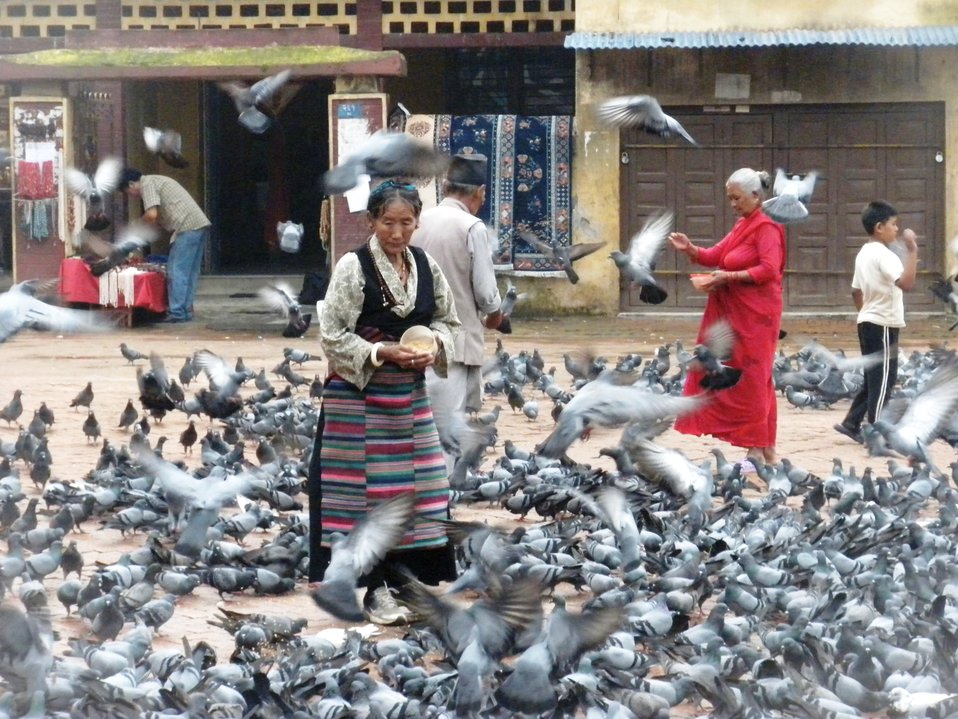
Acting Deputy Assistant Secretary Keshap Shares Photos from India and Nepal

U.S. Acting Deputy Assistant Secretary in the Bureau of South and Central Asian Affairs Atul Keshap shares photos from his August 2010 trip to India and Nepal.